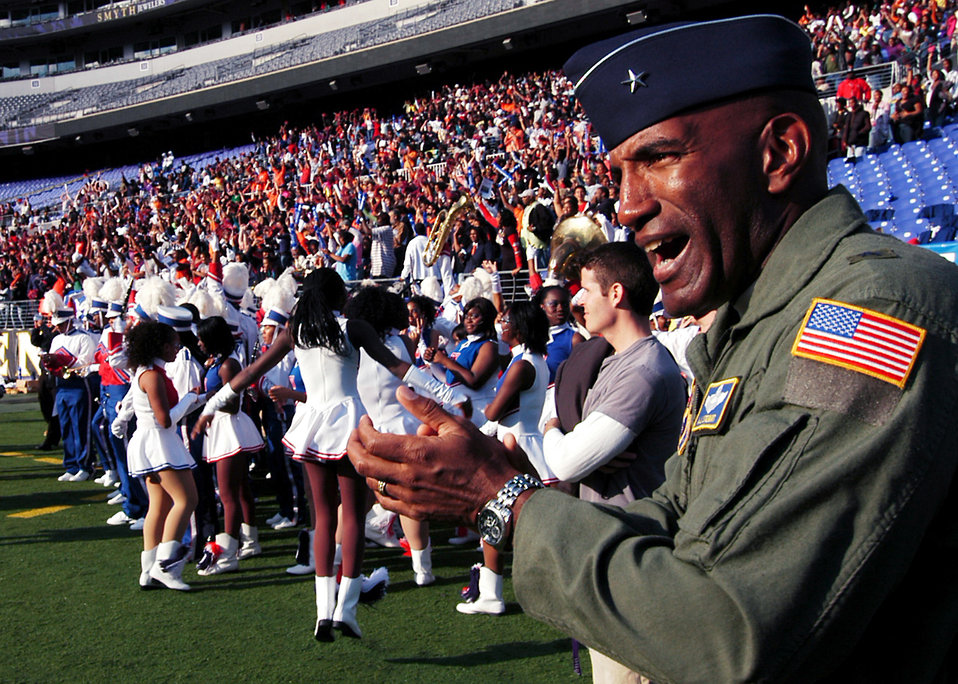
General shares game plan for success

Brig. Gen. Alfred J. Stewart cheers the Baltimore Polytechnic Institute High School football team following its 16-13 win over Baltimore City College High School Nov. 8 at M&T Bank Stadium in Baltimore. A Class of 1977 Baltimore Polytechnic Institute High School alumni, General Stewart shared inspirational words with both teams before the game and he presented a $500 college scholarship to a member of both high schools. General Stewart is the Air Force Recruiting Service commander.